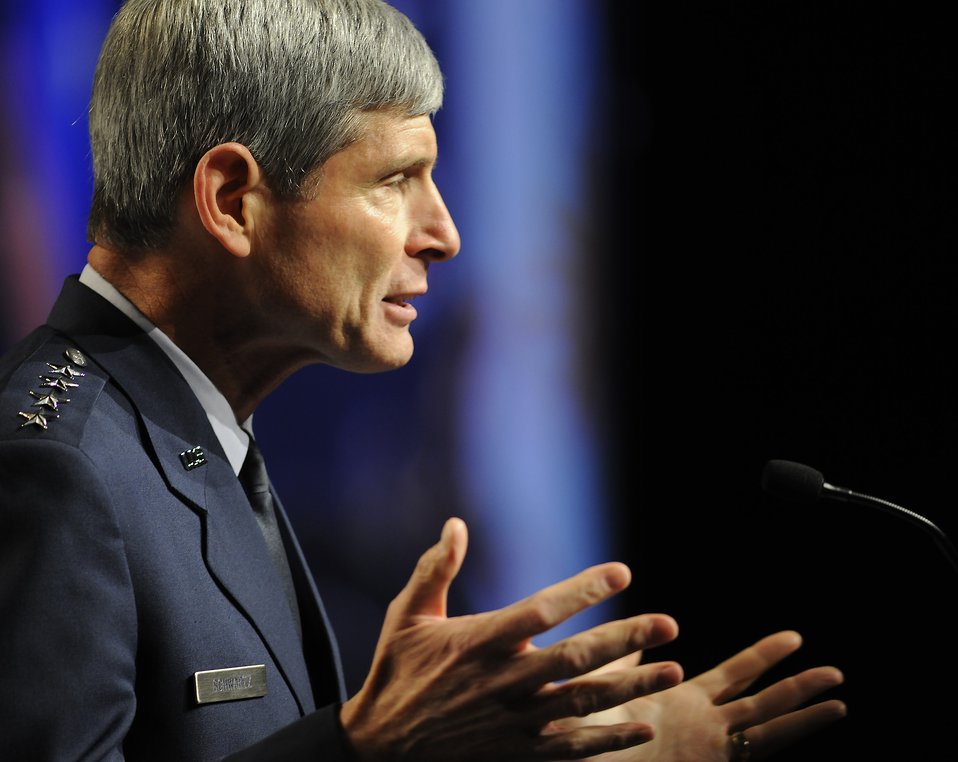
AFA

Air Force Chief of Staff Gen. Norton Schwartz delivers his keynote speech during the Air Force Association Air and Space Conference and Technology Exposition Sept. 15, 2009, at Oxon Hill, Md.